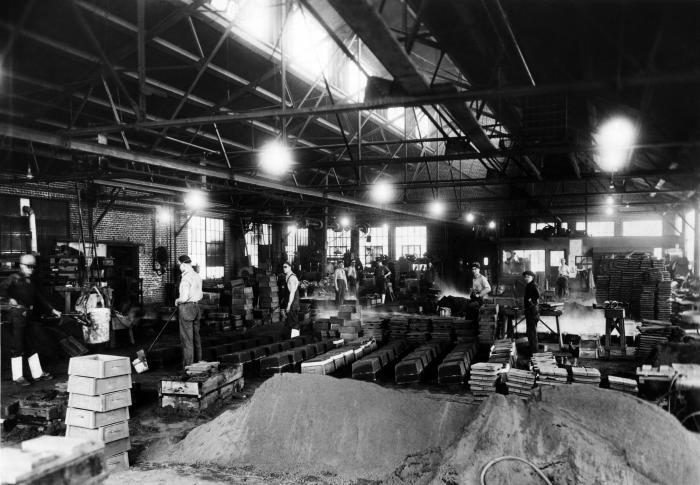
This 1949 historical photograph was provided by the Center for Disease Control's (CDC), National Institute for Occupational Safety and Health (NIOSH). The image showed a number of workers in a foundry that had been 'exhausted,' or cleaned. The workers were wearing either goggles, or eyeglasses, which offered a modicum of protection from airborne hazards. However, industrial workers located in such settings, can also be exposed to dust during the metalworking process, which is a potential respiratory health hazard, as well as an eye-health problem. This photograph appeared in the 'Industrial Hygiene Newsletter, Vol. 6, No. 7'.